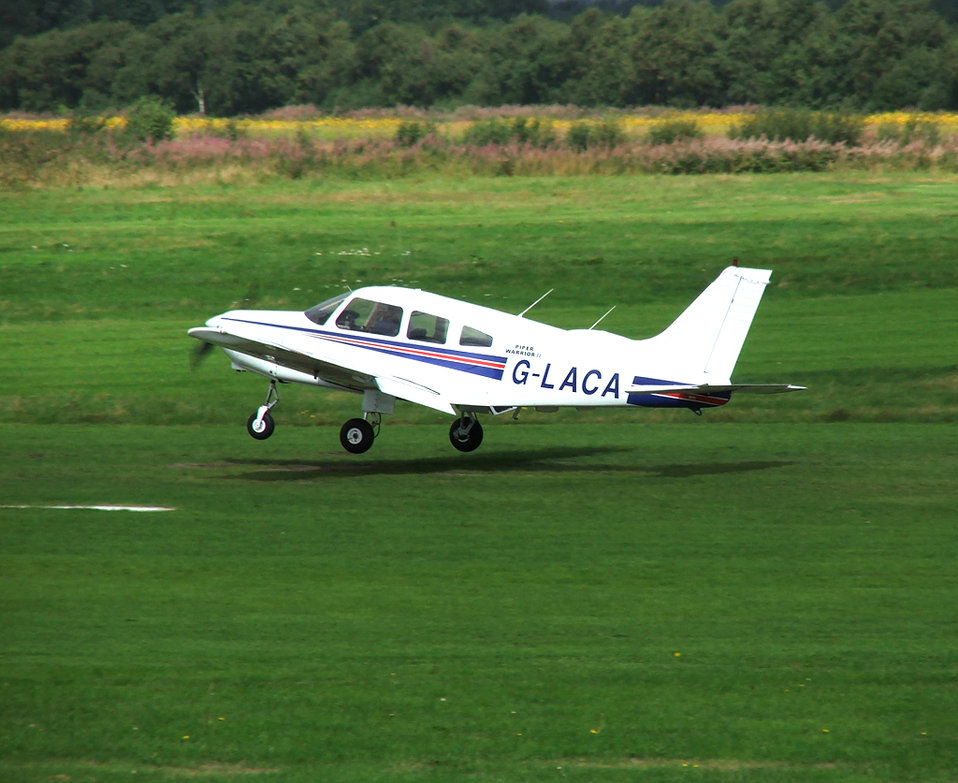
G-LACA - One of the Piper Pa-28-161 Warrior aircraft operated by LAC.